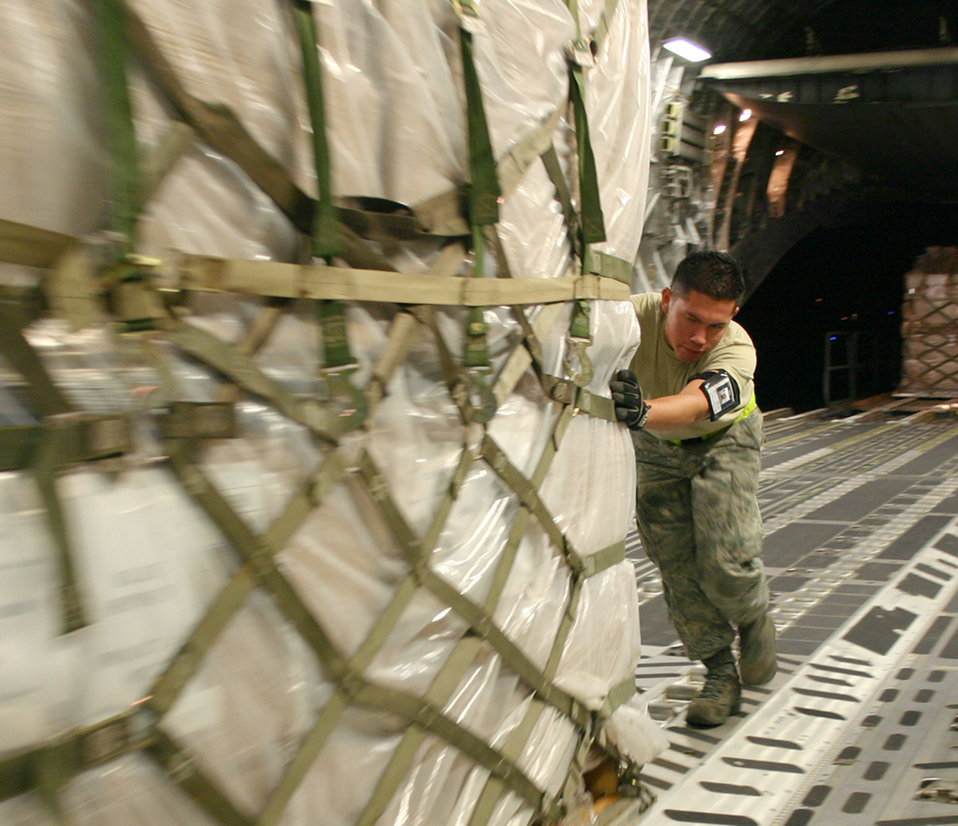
Airmen deliver 30,000 H1N1 prevention kits to South America

Air Cargo Specialist Senior Airman Rodrigo Maranon from the 437th Aerial Port Squadron pushes a pallet of personal protective kits into position aboard a C-17 Globemaster III at Charleston Air Force Base, S.C., May 8. The kits are part of a U.S. Agency for International Development shipment to Haiti, Guatemala, Honduras, El Salvador, Nicaragua and Belize to help these nations prepare for a potential outbreak of the H1N1 influenza virus.